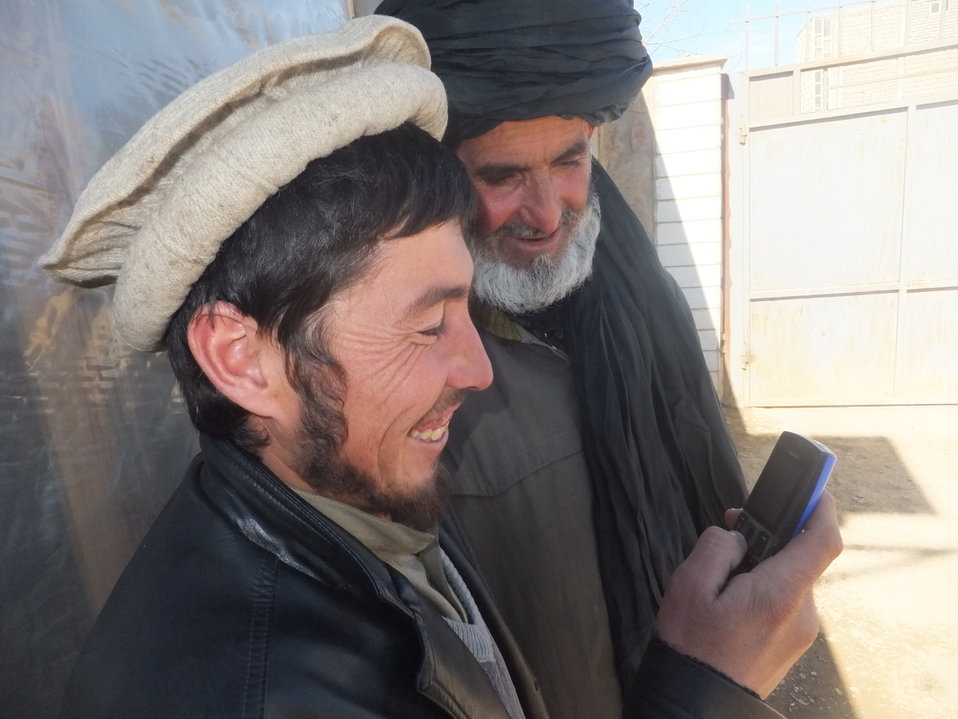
Mr. Amir Khan, a resident in Chaghcharan reads the SMS received from the Ghor Deputy Provincial Governor. The DPG sent SMS to inform residents that the government is distributing wheat to drought affected families.